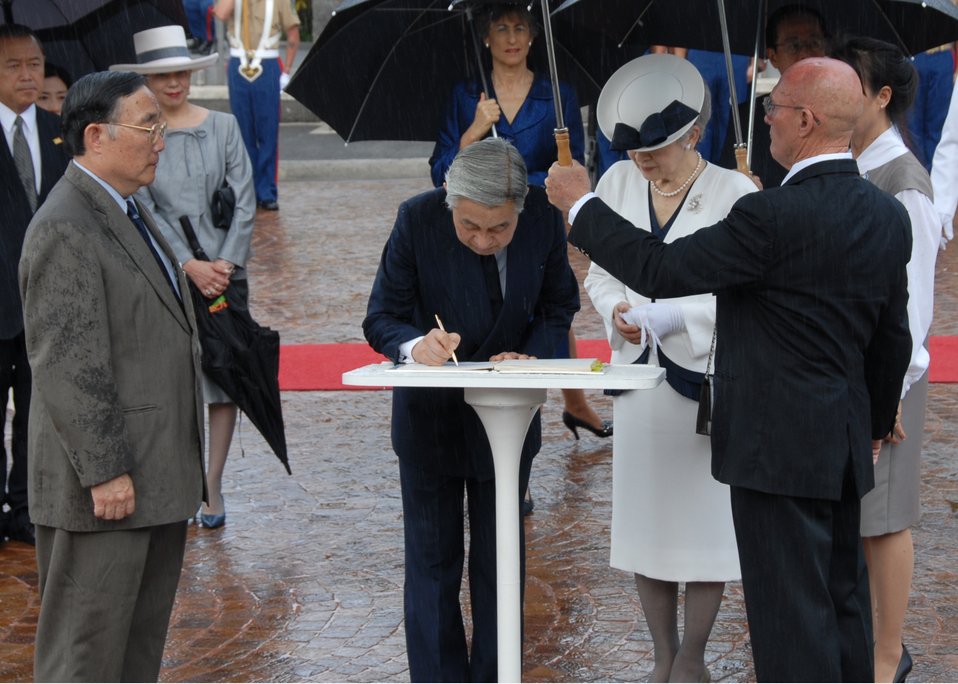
Japanese royalty honors America's fallen

Emperor Akihito and Empress Michiko sign the guest book July 15 at the National Memorial Cemetery at Punchbowl Crater, Hawaii. The Imperial couple lay a wreath to honor the more than 50,000 service men and women interred at the cemetery.